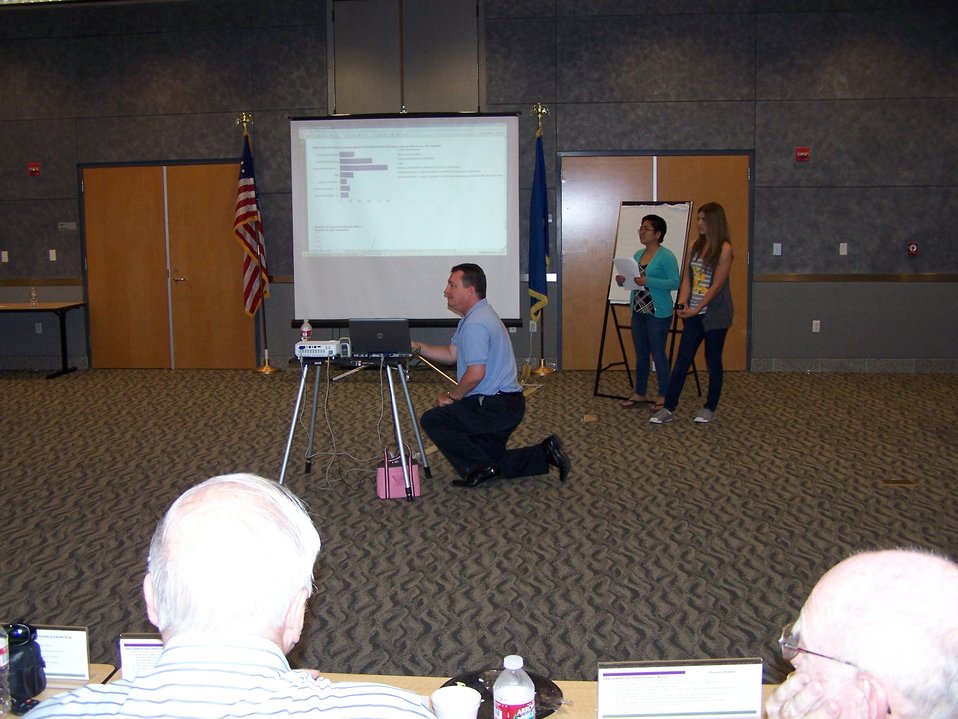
Liaison Program Draws Together School, NNSS and Community

Two high school students are aspiring to educate their classmates on the Nevada National Security Site’s (NNSS) environmental cleanup program after surveying them to gauge their knowledge of it.
After West Career and Technical Academy (WCTA) juniors Justine Leavitt and Cielo Gumabon analyze the survey results, they will develop an educational tool to boost students’ familiarity with NNSS’s work to clean up the environmental legacy of historic nuclear weapons related activities. Leavitt and Gumabon are considering several ideas for the tool, from a short documentary and audience-interactive school assembly to a rap song or comic book.